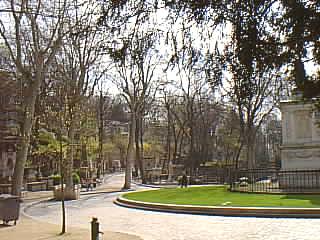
1 pere lachaise primavera